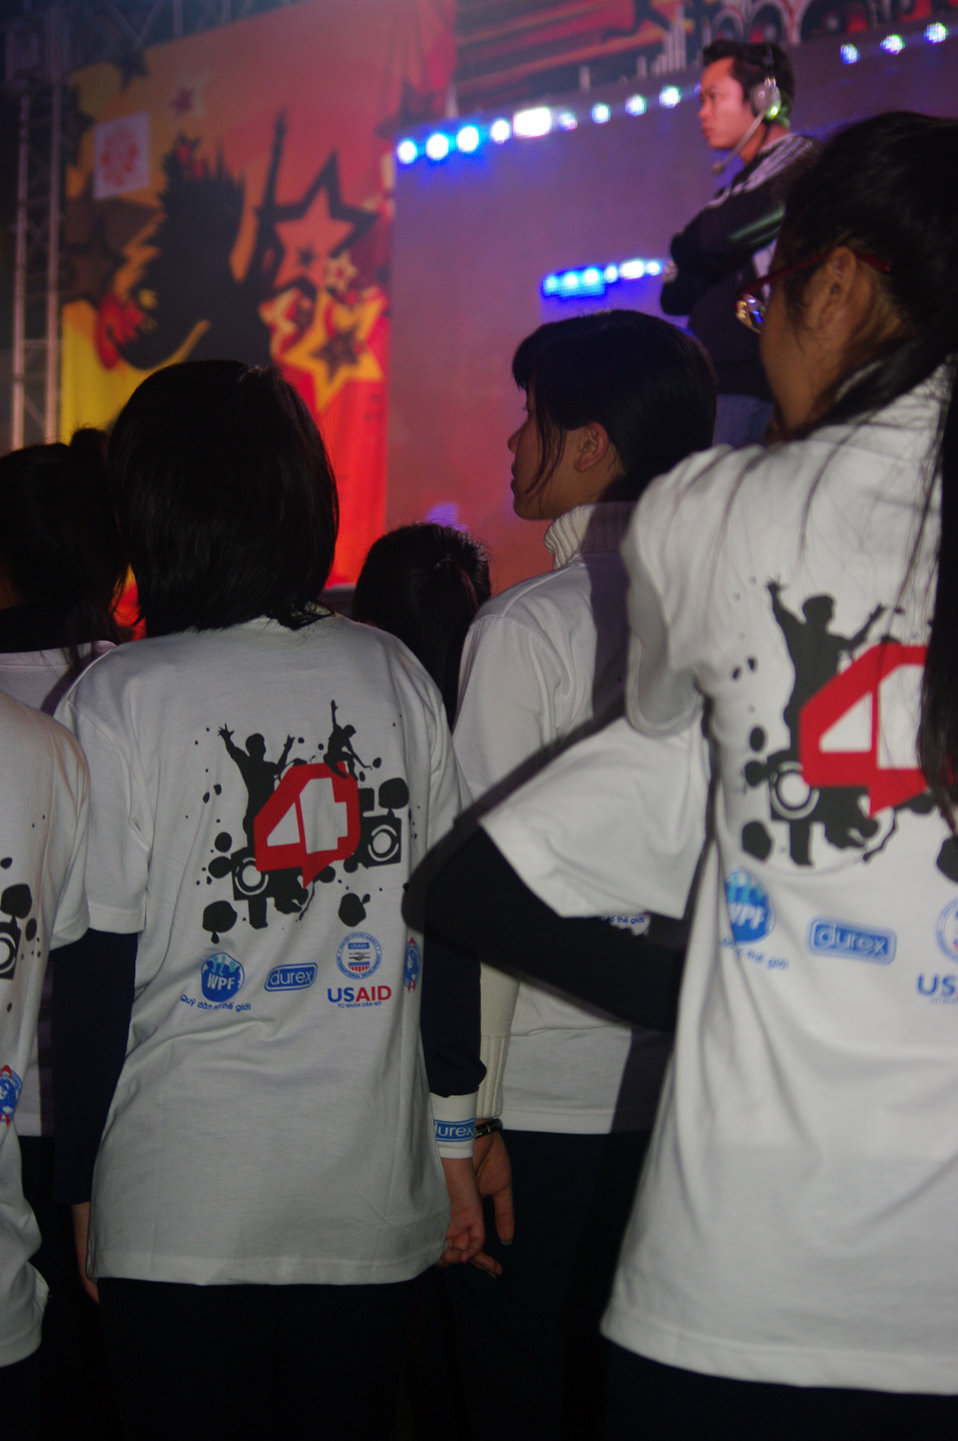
USAID supports dance4life to raise awareness of HIV and fight stigma in Vietnam

Teens came out in large number to see Big Toe dance and join in the fun.